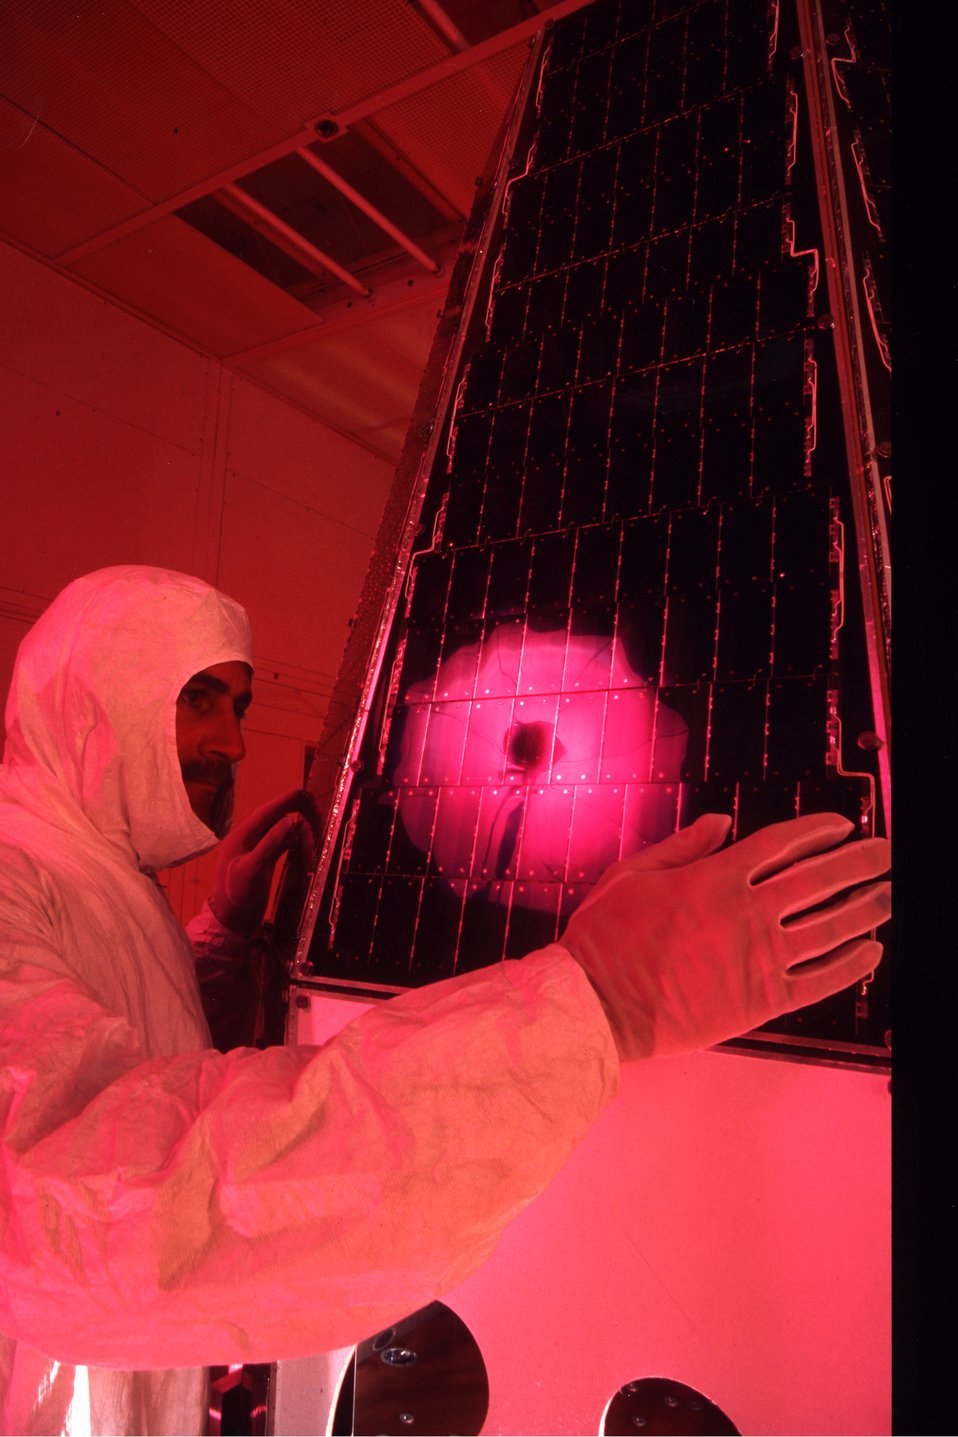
AT LOS ALAMOS NATIONAL LABORATORY, FORTE, THE FIRST SATELLITE MADE OF AN ALL-COMPOSITE STRUCTURE, TESTED NEW TECHNOLOGIES TO SPOT SECRET NUCLEAR WEAPONS TEST IN OTHER COUNTRIES.